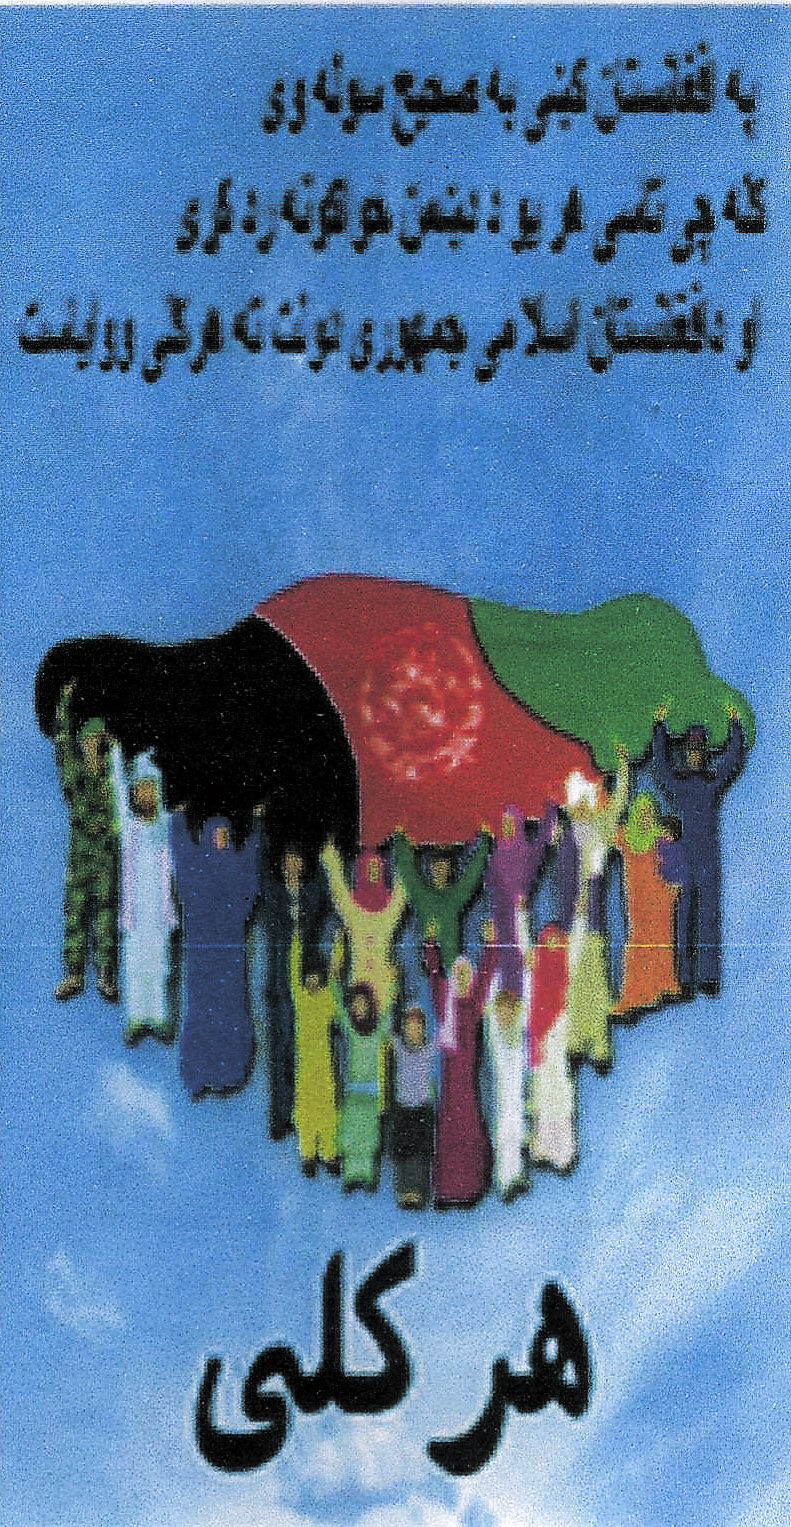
C-130J tailor-made for mission over Afghanistan

A C-130J Hercules assigned to the 746th Expeditionary Airlift Squadron from a Southwest Asian air base performed a leaflet drop over Afghanistan March 6 as part of an integrated operation with NATO's International Security Assistance Force. The leaflet translates,